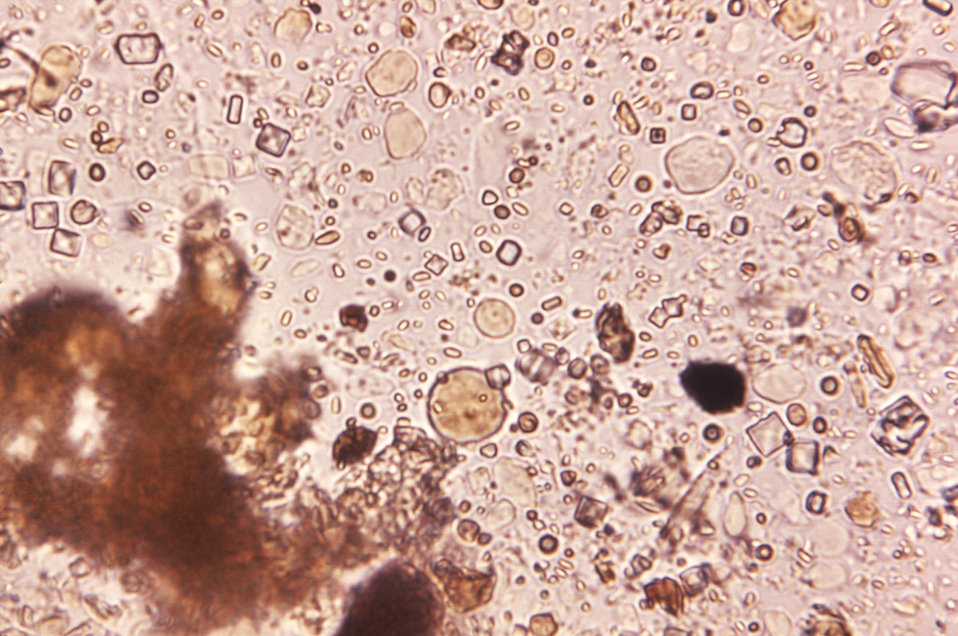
Magnified 500X, this iodine-stained, concentrated, direct mount photomicrograph revealed the presence of a cyst of the protozoan parasite, Entamoeba coli. This is one intestinal parasite, which lives as a commensal organism, existing harmlessly in the human digestive tract. Of importance, is the fact that this organism can often be confused with its pathogenic counterpart, E. histolytica.